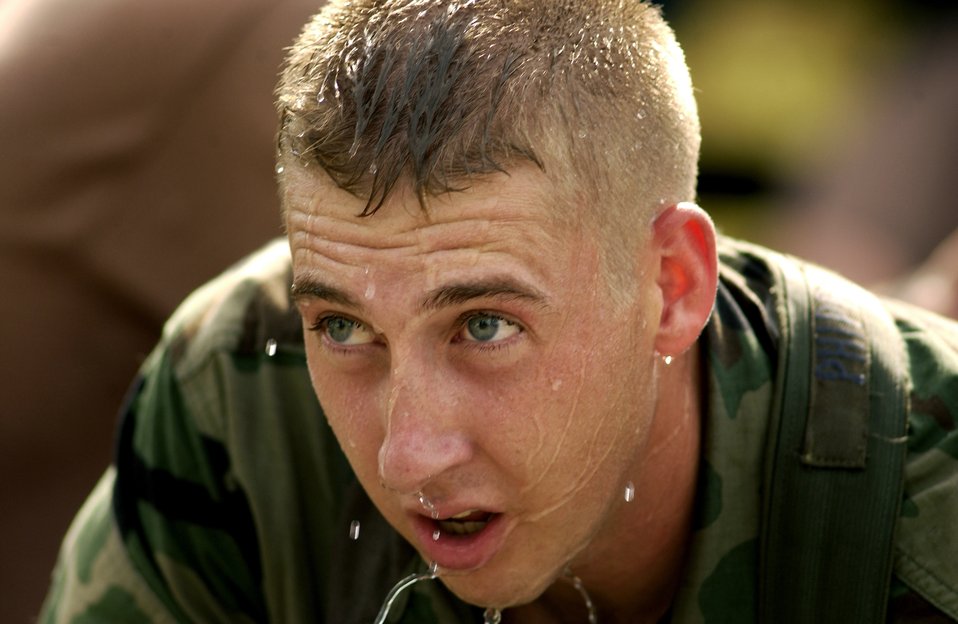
Soothing finish

AVON PARK, Fla. -- Staff Sgt. Shawn Phipps dumps a cup of water over his head after completing a 12-mile ruck march during Dragon Challenge 04 here Dec. 6. Dragon Challenge is an annual competition which tests the physical, mental, and emotional strength, and endurance of tactical air control party Airmen. Sergeant Phipps is assigned to the 682nd Air Support Operations Squadron at Shaw Air Force Base, S.C.